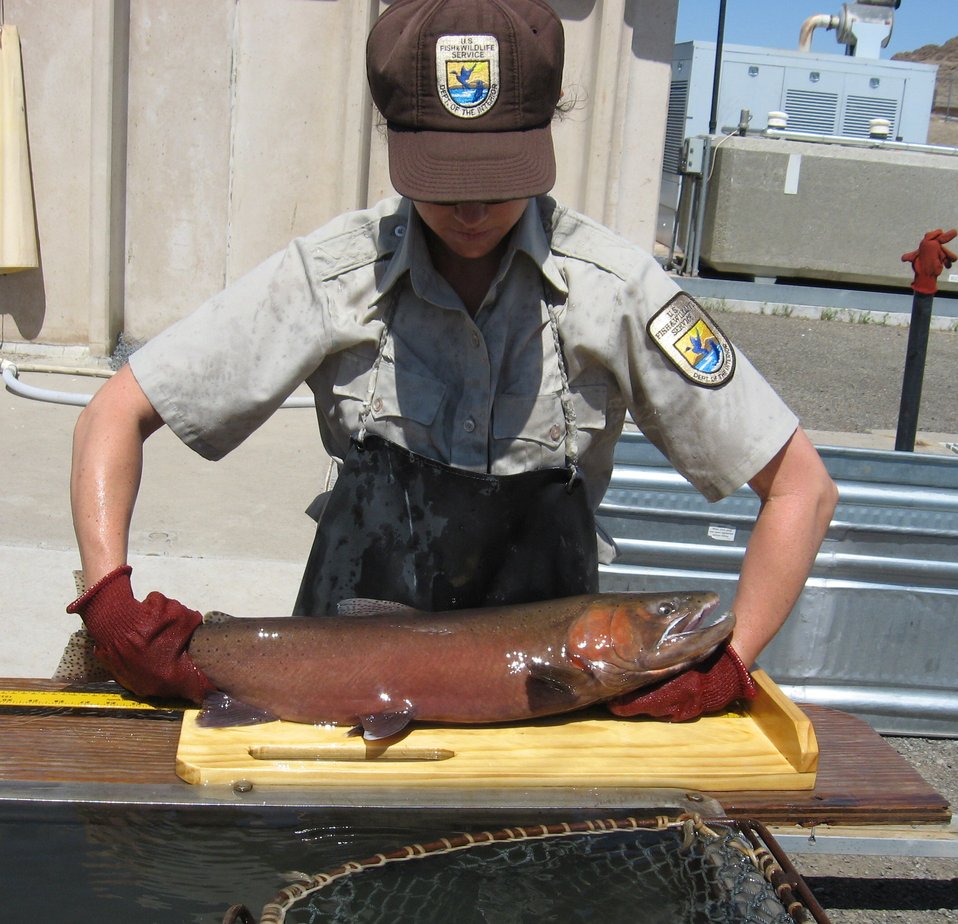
Lahontan cutthroat trout

Fisheries biologist Corene Luton measures a Lahontan cutthroat trout as it moves through the fish passage facility at Marble Bluff Dam, Nevada